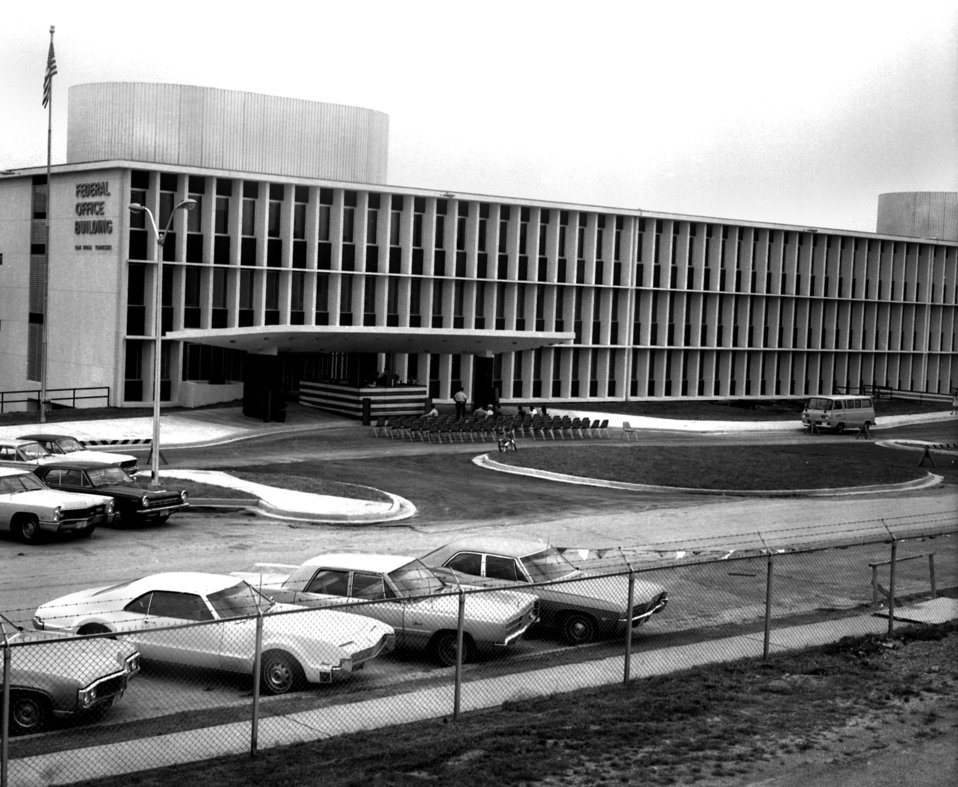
Formal Dedication New AEC (Atomic Energy Commision) - FOB (Federal Office Building) Oak Ridge

70-174 DOE Photo by Frank Hoffman
Formal Dedication New AEC (Atomic Energy Commision) - FOB (Federal Office Building) Oak Ridge Tennessee 6-27-1970